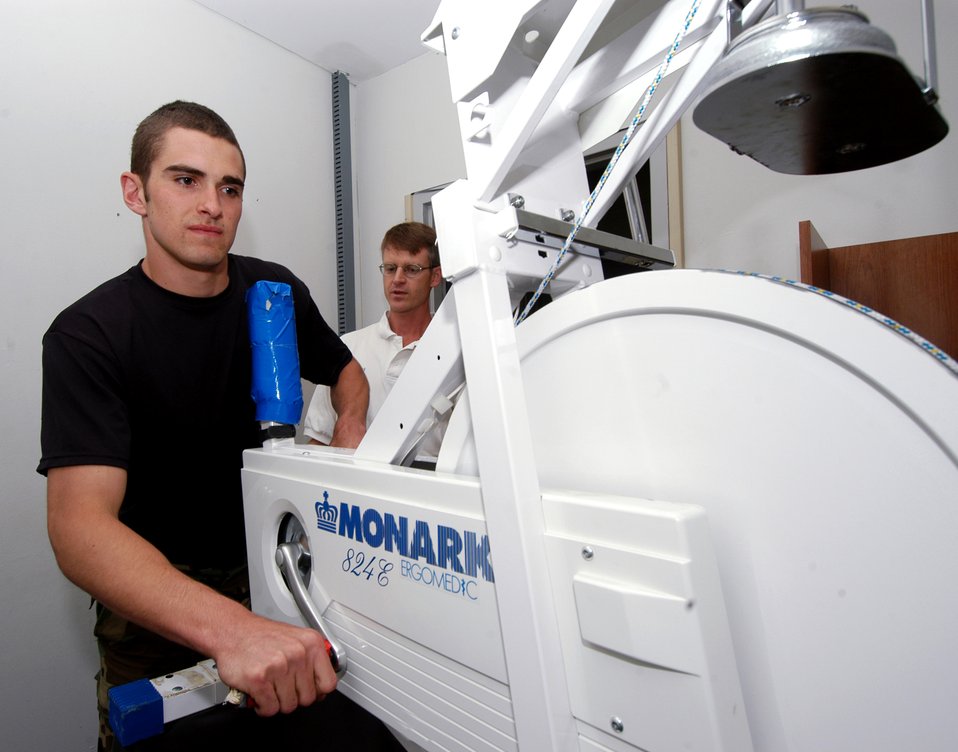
From playing fields to battlefields

Cadet 2nd Class Denver Sanders tests his upper-body strength on an adapted stationary bike at the Air Force Academy Human Performance Lab on Tuesday, May 23, 2006. The lab is refining techniques to help today's warfighter adapt to high-altitude locations like those found in Afghanistan.